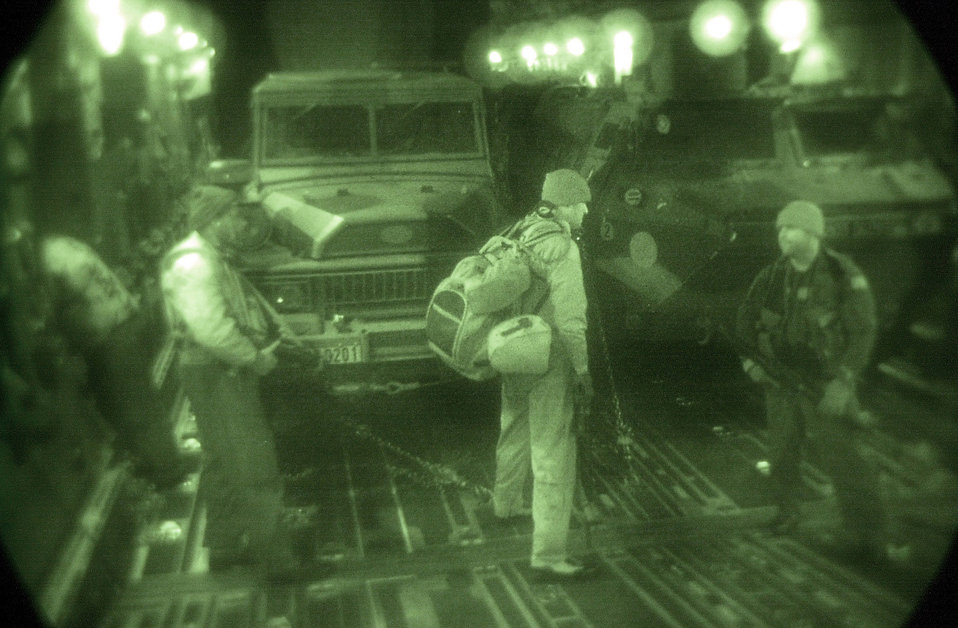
RAVENS

OPERATION ENDURING FREEDOM -- Having landed at a remote air base in Afghanistan, four Air Force Security Forces RAVENs prepare to exit from the rear of a C-17A Globemaster III. The team will provided security for the aircraft and personnel. This mission was the first deployment of French soldiers and over 1,000 tons of security equipment as part of Operation Enduring Freedom.